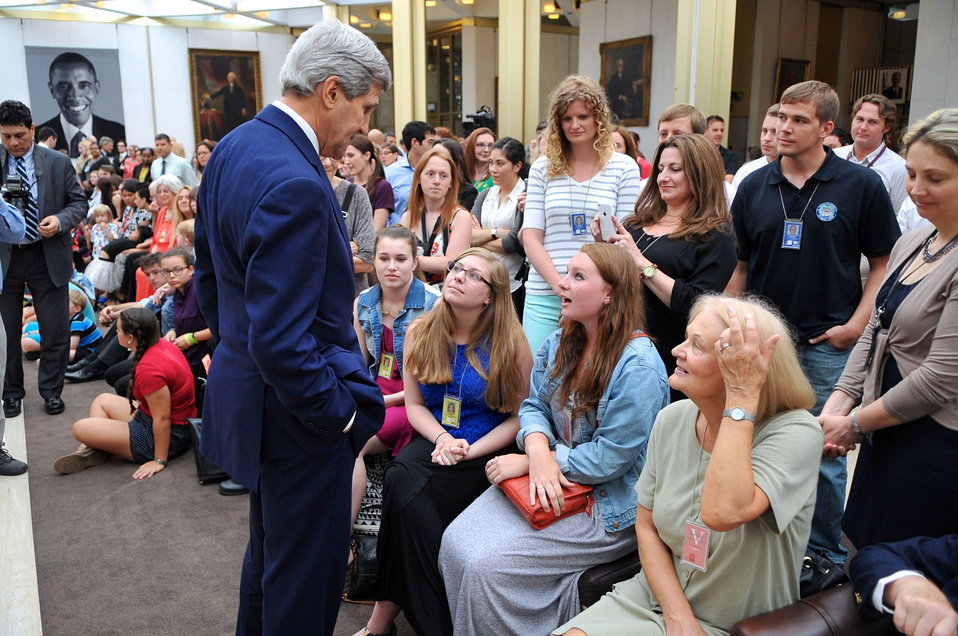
Secretary Kerry Greets Embassy London Staff

U.S. Secretary of State John Kerry greets family members and friends of Embassy London staff members after addressing them during a visit to the United Kingdom on June 13, 2014.